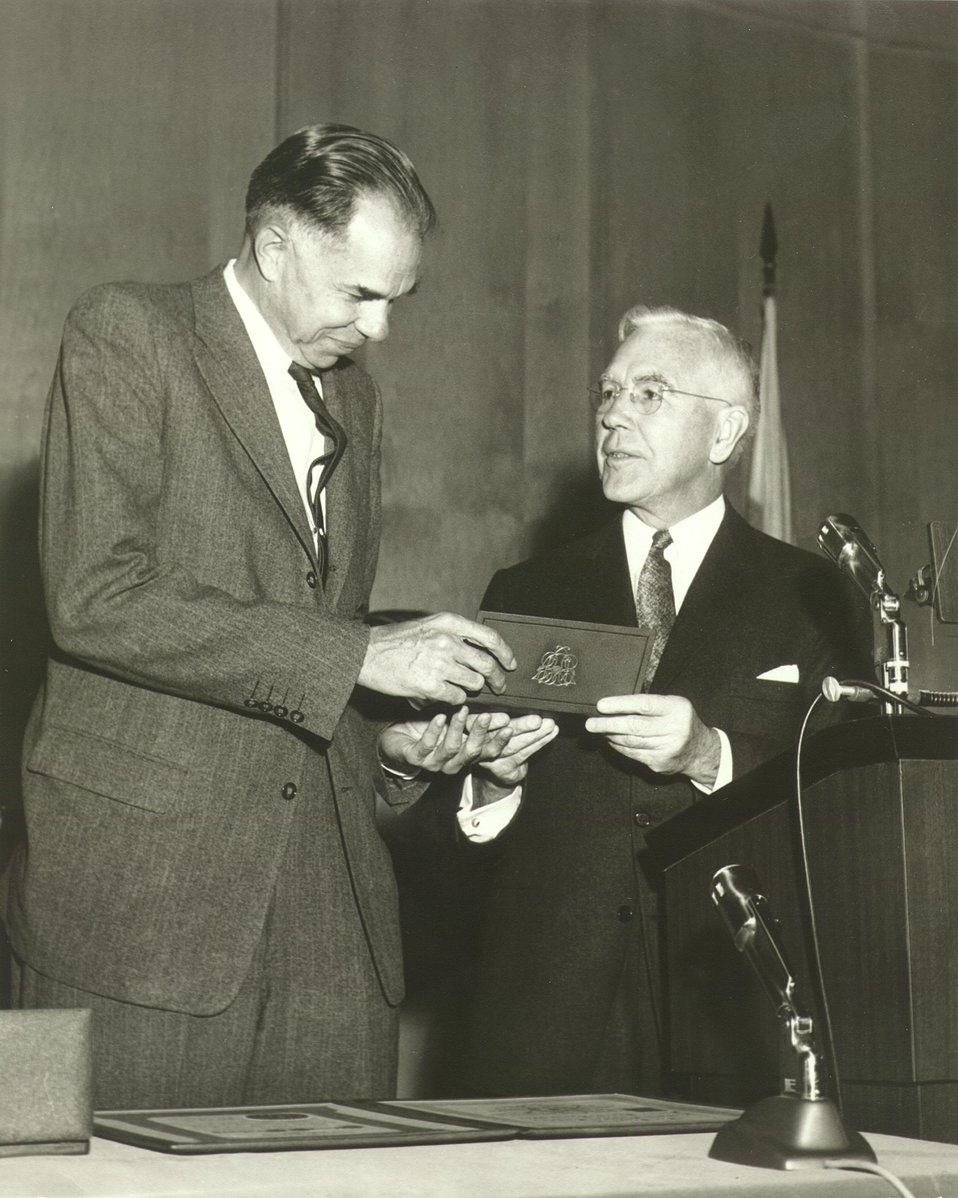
Fermi Award Ceremony for Dr. Seaborg in Washington on Dec. 2, 1959. L to R: Glenn Seaborg and AEC Chairman John McCone.